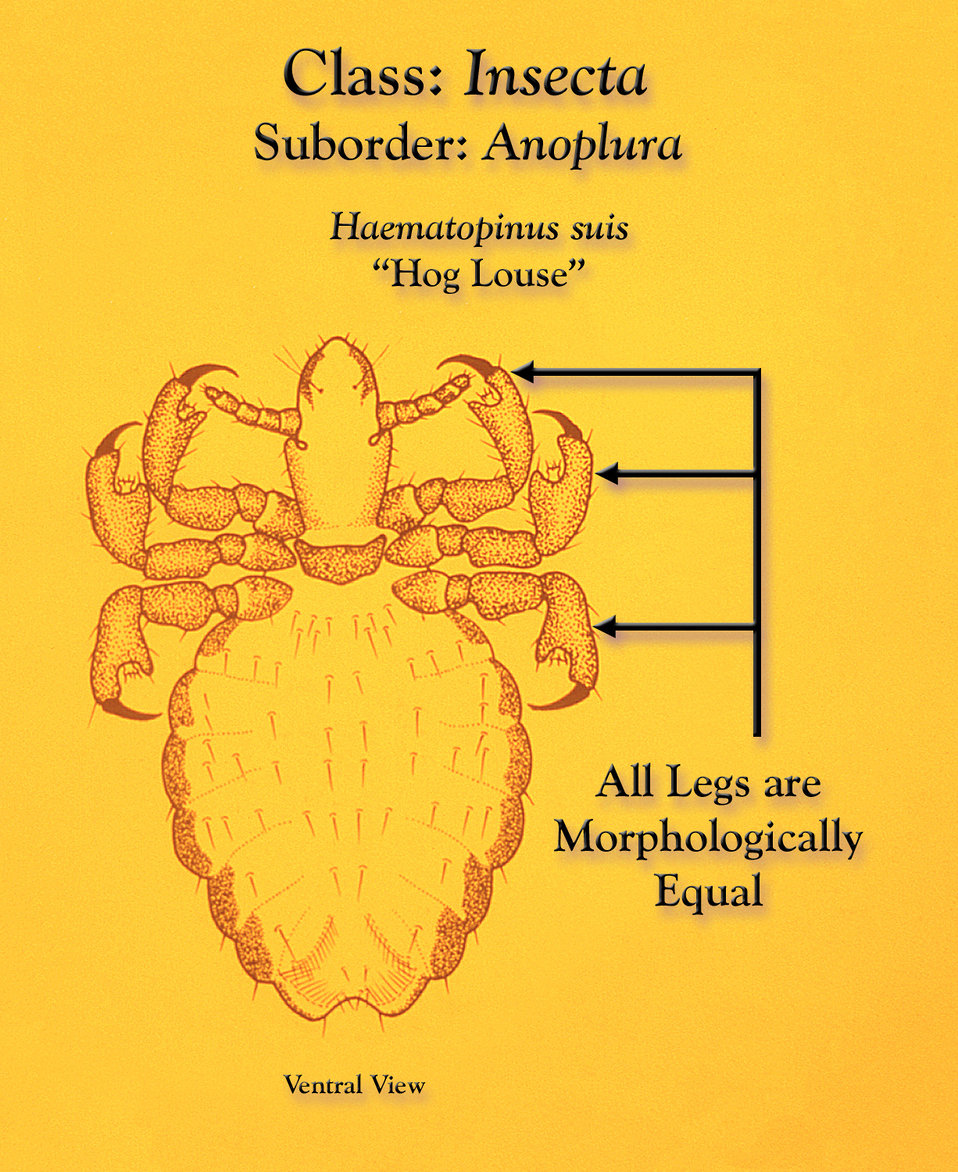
This illustration depicts a ventral view of a 'hog louse', Haematopinus suis, whose legs are all equivalent in morphologic stature.